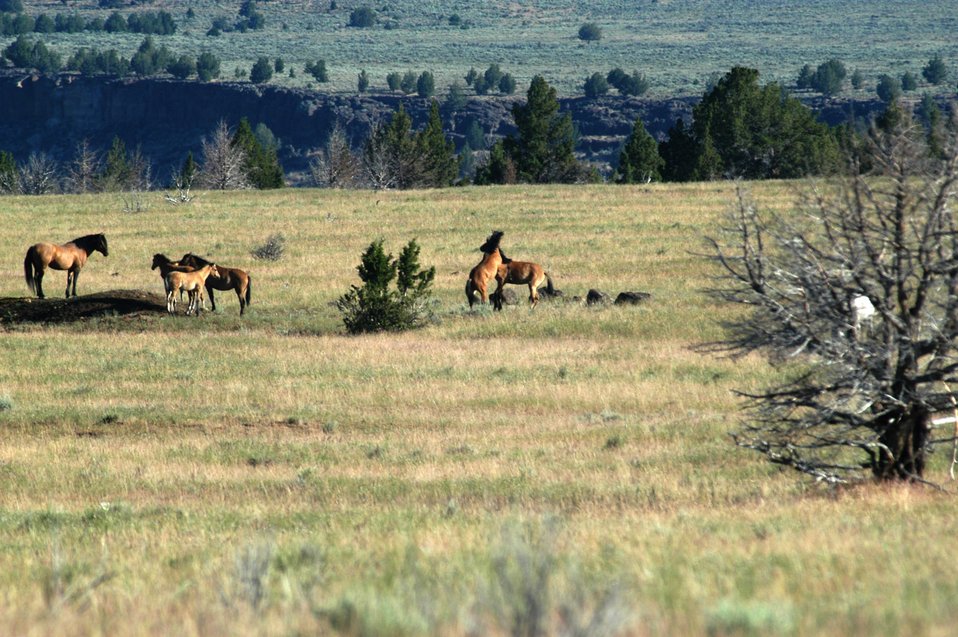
Kiger horses roam the plateaus of the Kiger Wildhorse Herd Management Area near Steens Mountain in Southeastern Oregon.